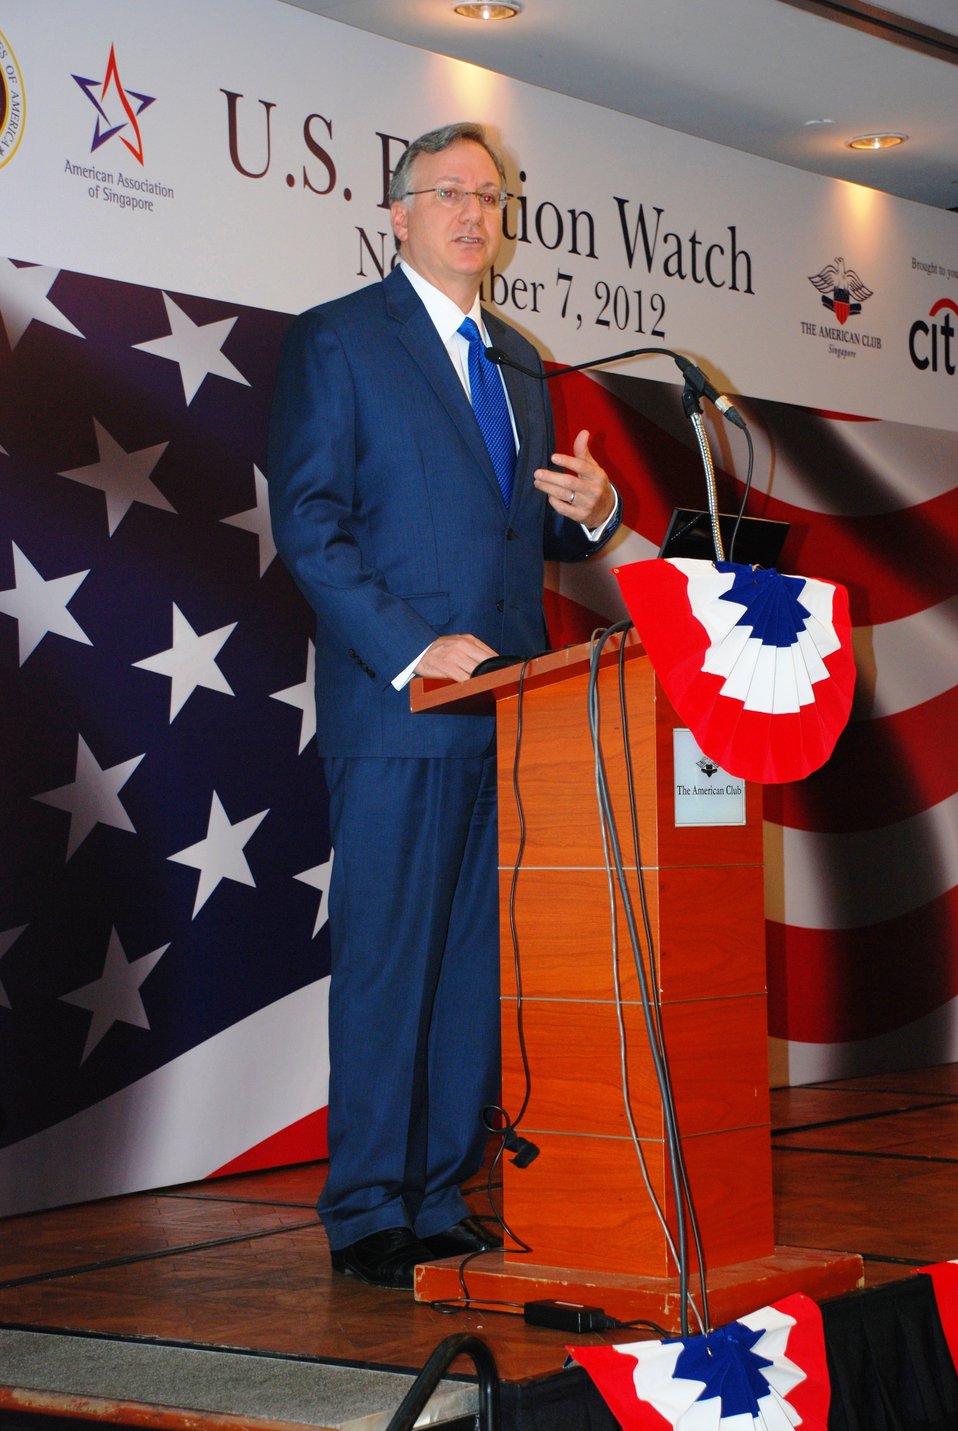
Ambassador Adelman Delivers Remarks at the 2012 U.S. Election Watch Event

U.S. Ambassador to Singapore David Adelman delivers remarks at the 2012 U.S. Election Watch event at the U.S. Embassy in Singapore, November 7, 2012.